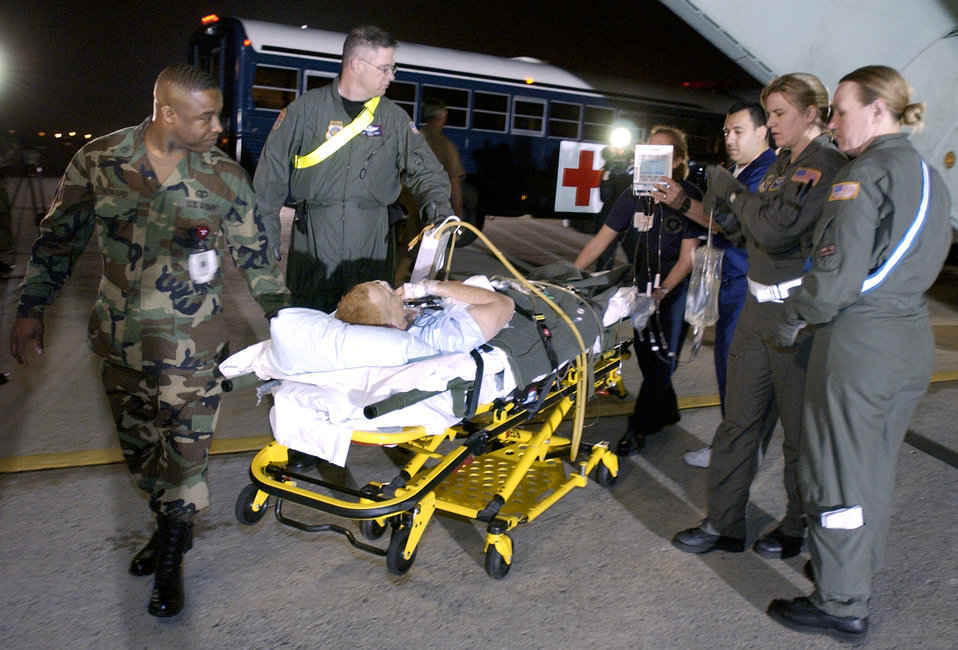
Careful transport

ANDREWS Air Force Base, Md. -- Crew members of the 491st Expeditionary Air Medical Evacuation Squadron carry one of 13 U.S. coalition force members wounded in the war in Iraq off of a C-141 Starlifter to a waiting ambulance here March 28, 2003. The 13 patients, made up of two airmen, one sailor, four Marines and six soldiers, are the first wounded in the war in Iraq to arrive in the United States. They were flown in from Landstuhl Hospital, Ramstein Air Base, Germany, for treatment at Walter Reed Army Medical Center in Washington, D.C. and Bethesda Naval Medical Center in Rockville, Md. The 491st EAMES is made up of Air Force Reservists from McGuire Air Force Base, N.J., and McChord Air Force Base, Wash.,